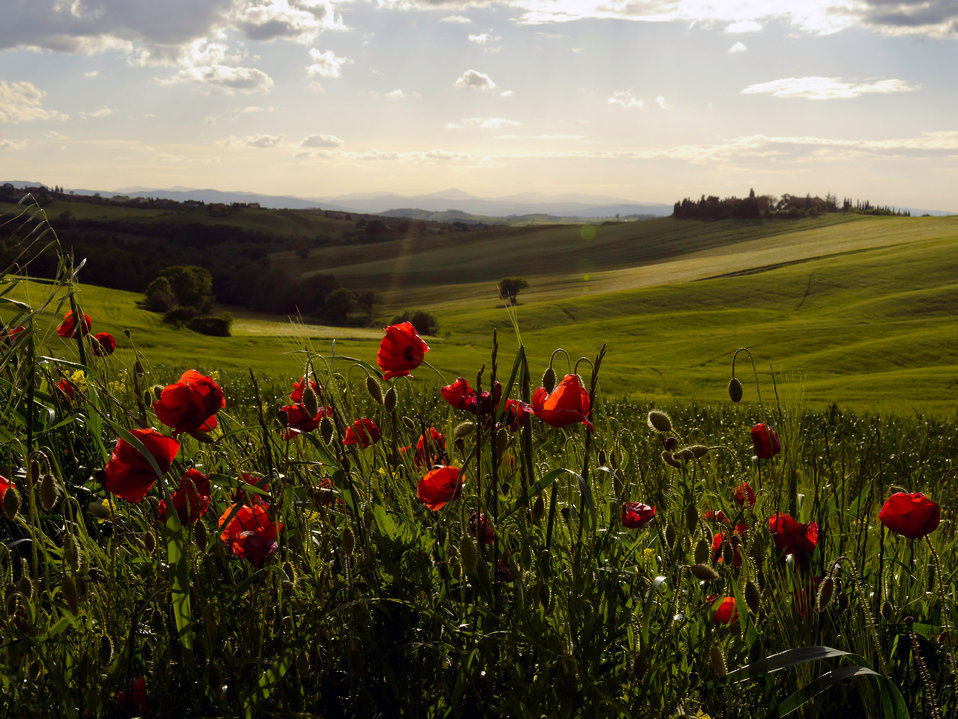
Tuscan countryside with poppies.